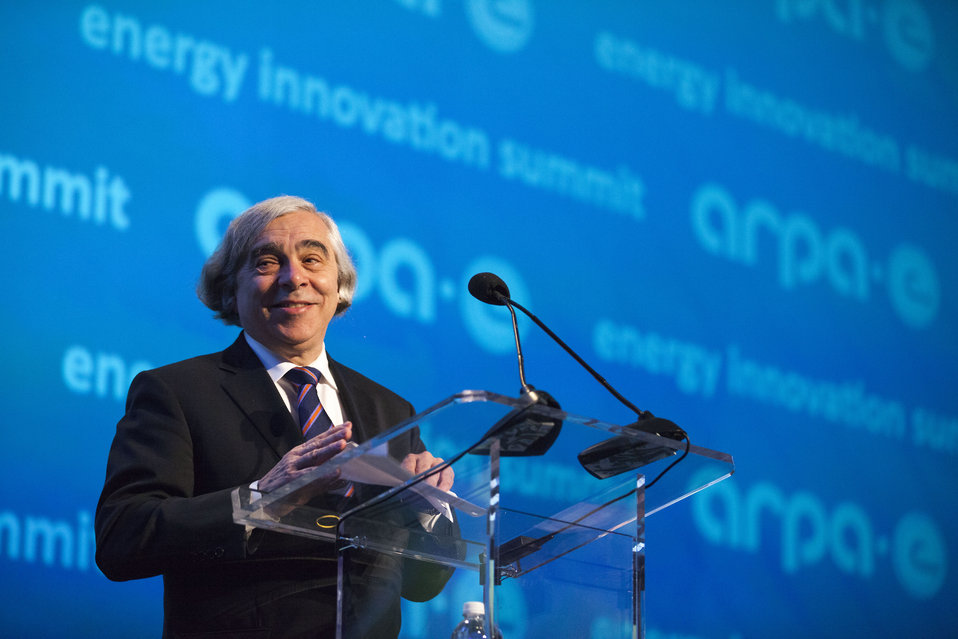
The Energy Department’s ARPA-E Energy Innovation Summit gathers innovators, academia, government and industry to discuss pressing energy issues and breakthrough technologies. In this photo, Secretary of Energy Ernest Moniz takes the podium to introduce journalist and author Thomas Friedman to the stage.